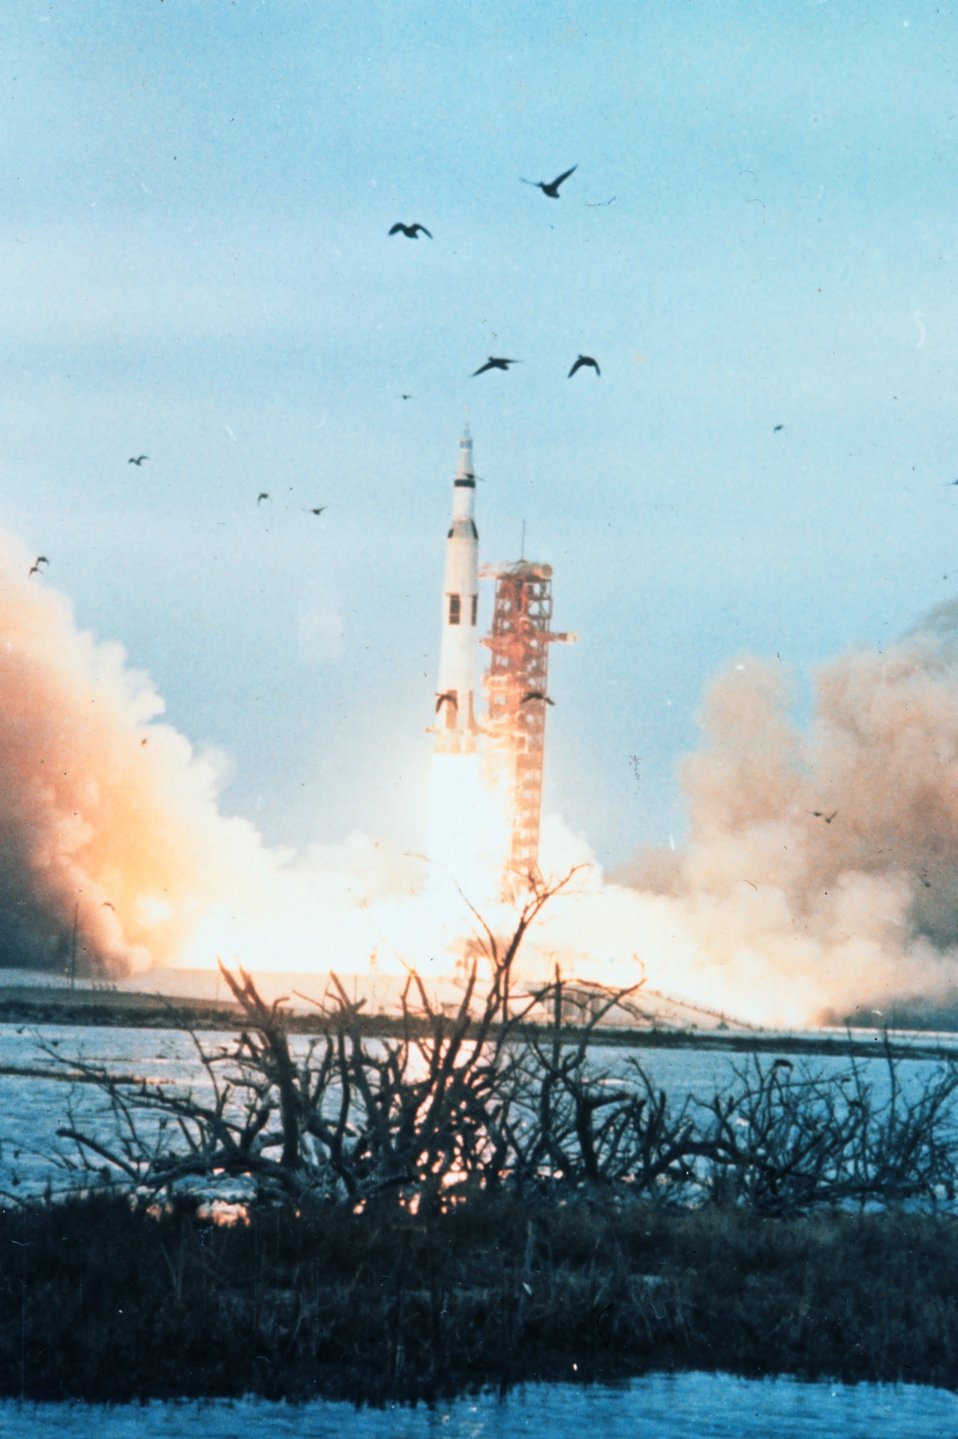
Although not a Weather Bureau satellite being launched, the wetlands and seabirds of Cape Canaveral provide a wonderful forefront for observing this launch.